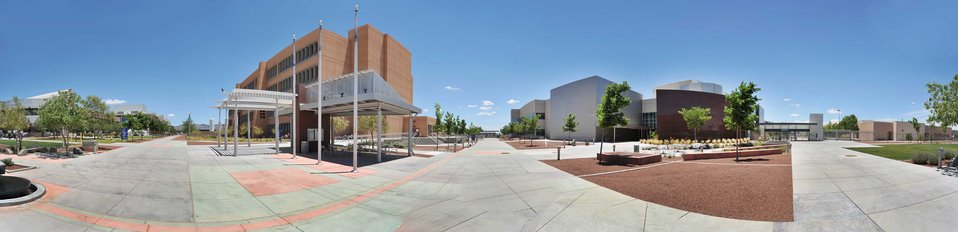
At Sandia, the Microsystems and Engineering Sciences Applications (MESA) complex's initial mission is to produce electronic circuits and computer chips designed to withstand high levels of radiation.
These hardened electronics are critical to national security needs. Beyond its security role, MESA's combination of high-performance computing simulations, scientific research, and production capabilities in electronics and optics at the micro and nano levels makes it a world leader in a new type of simulation-led engineering that improves the quality of consumer goods.